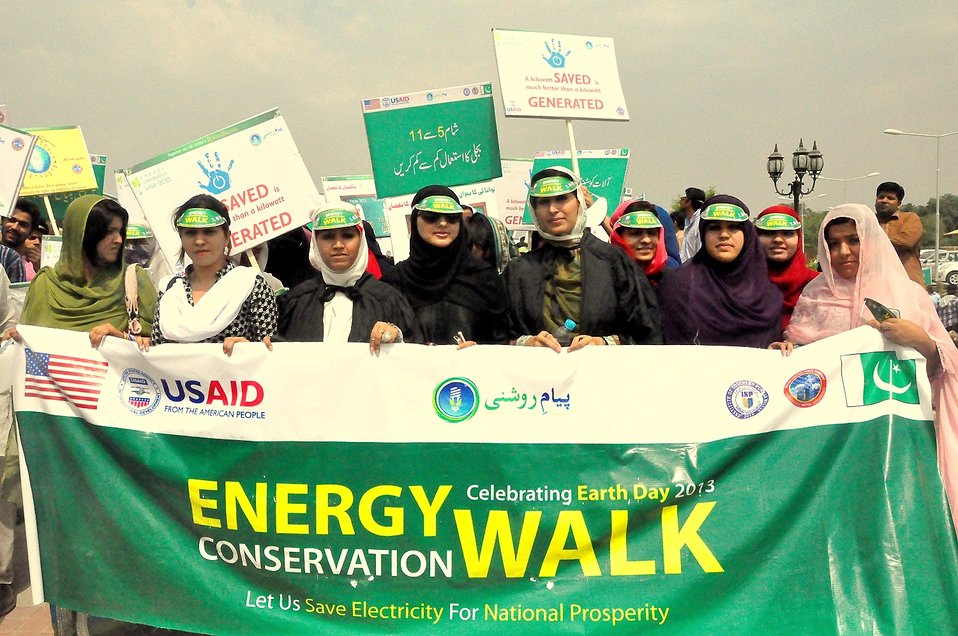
USAID celebrates Earth Day 2013

A total of 4500 students from different educational institution of Multan city participated in an erergy conservation walk.